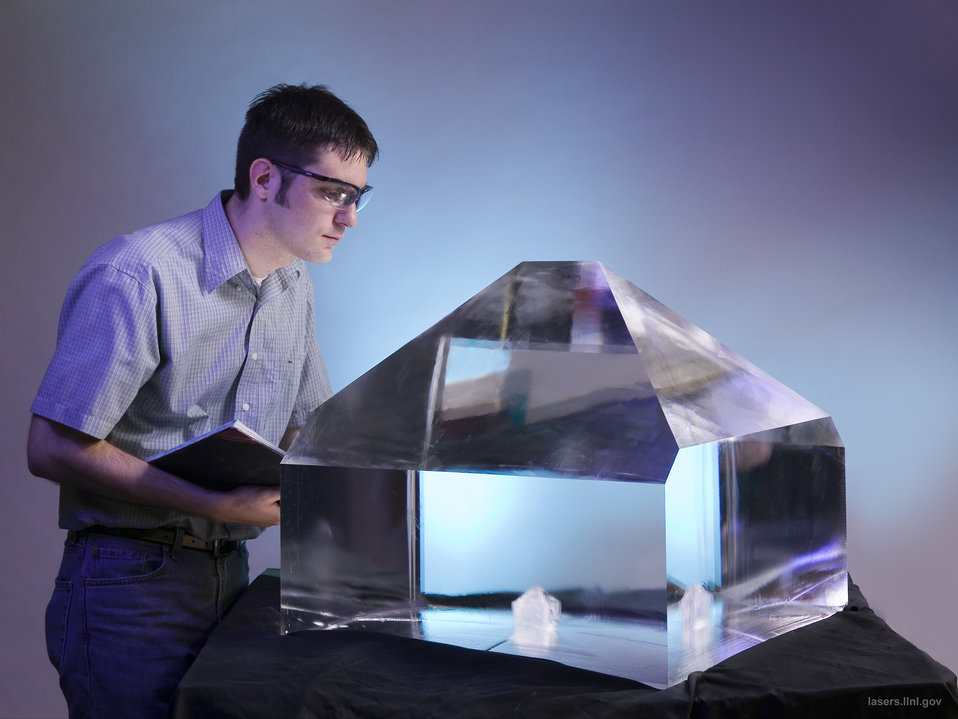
Shown is the potassium dihydrogen (KDP) crystal, weighting almost 800 pounds.

The crystal was produced for the National Ignition Facility through a newly developed rapid-growth process that only takes months, as opposed to two years using conventional methods. Each crystal is sliced into 40 centimeter-square crystal plates. More than 600 of these plates are needed for NIF.